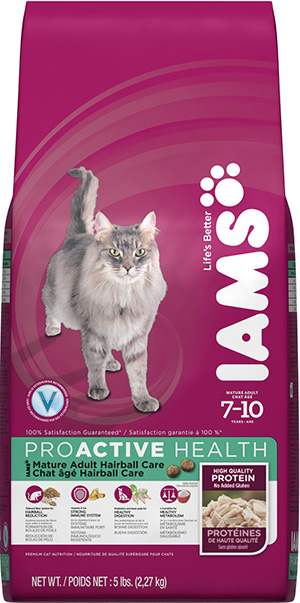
RECALLED – Dog and Cat foods - Dry

August 14, 2013 – Product Recall – P&G Voluntarily Recalls Limited Quantity of Dry Pet Food Due to Possible Health Risk.